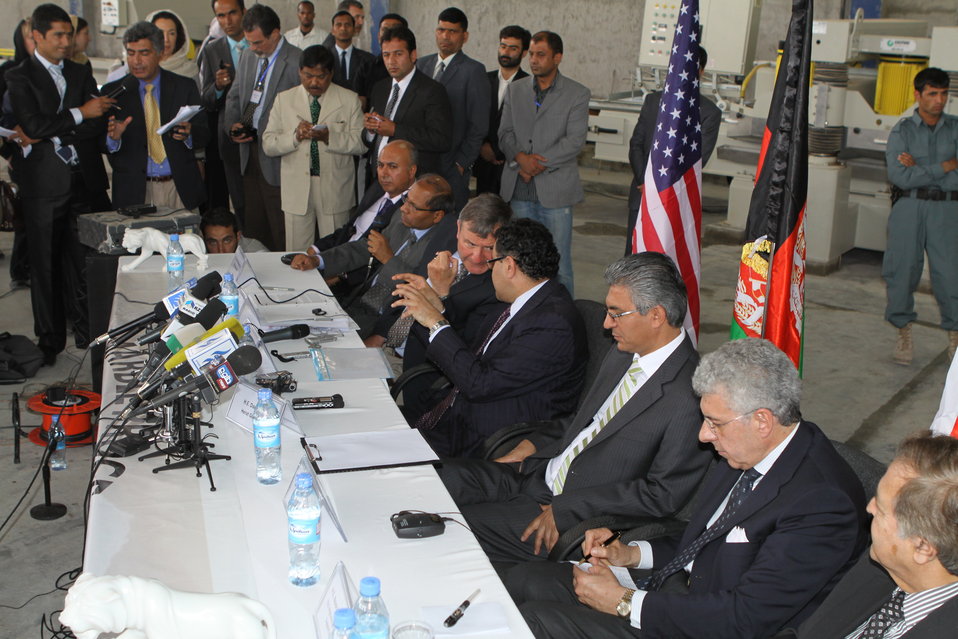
100525 Hirat Marble Conference 371